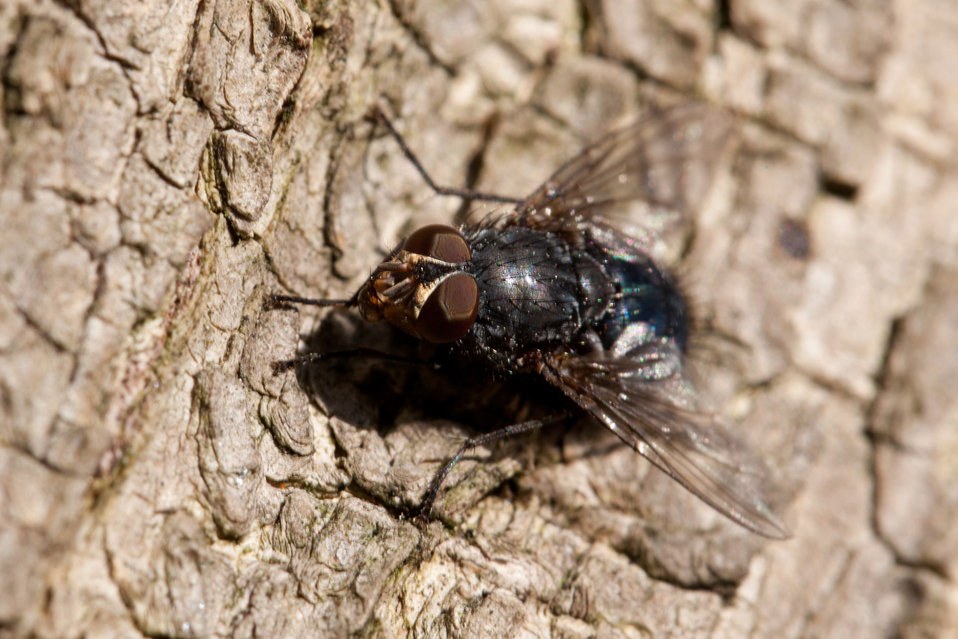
Close up of a fly on tree bark.